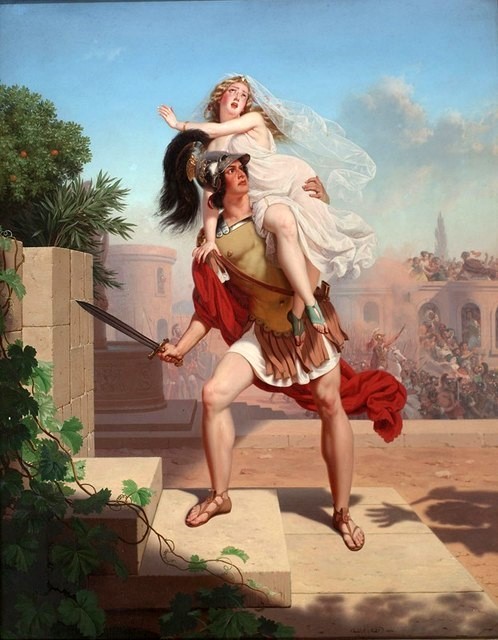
Charles Christian Nahl 1870, The Rape Of The Sabines - The Abduction